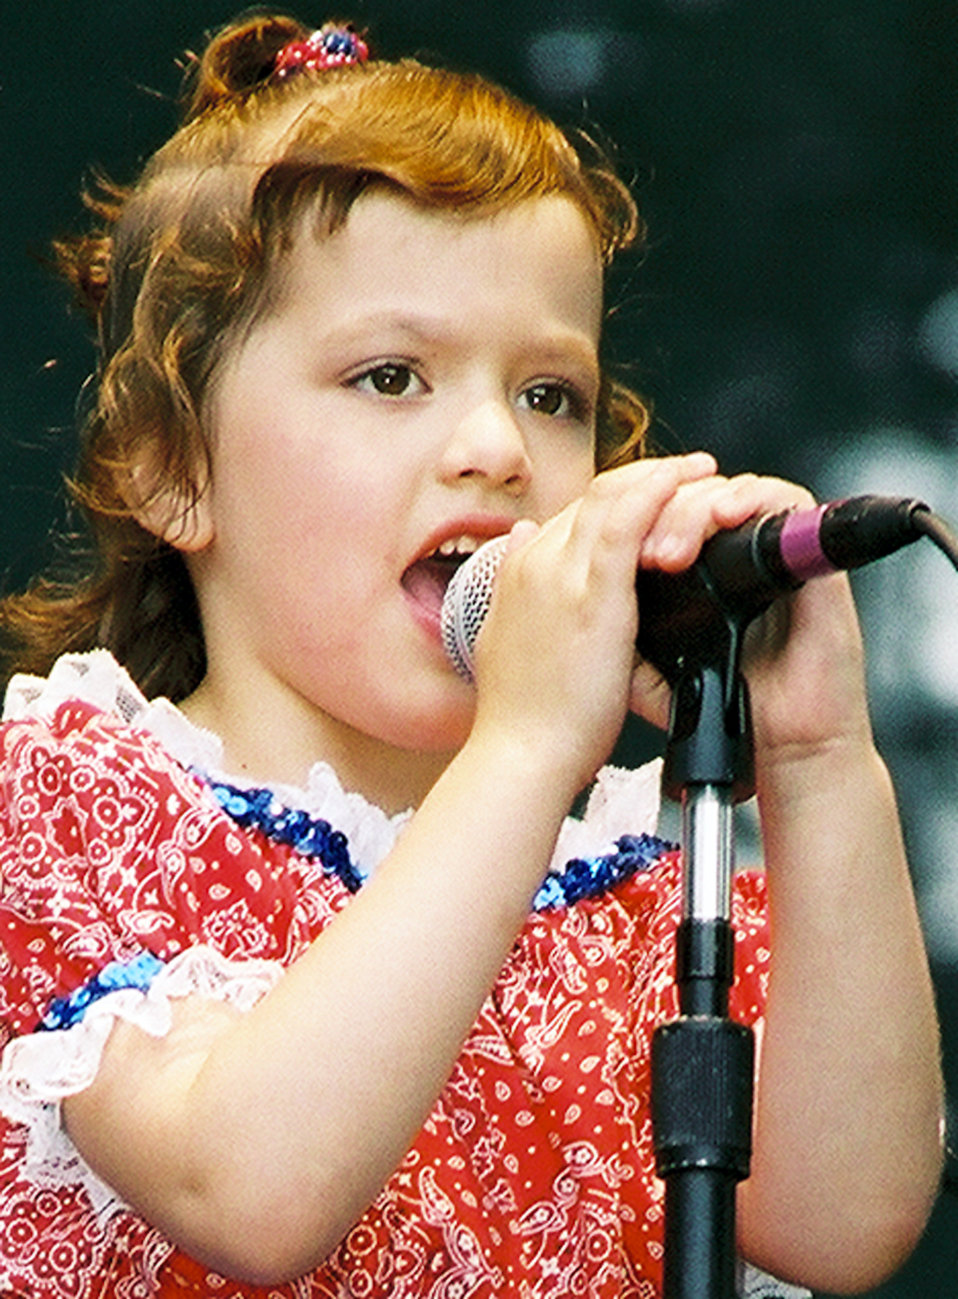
Opening act

AGAWAM, Mass. -- Six-year-old Jordyn Tabury set the stage for country-music artist Lee Greenwood at a military appreciation day concert at Six Flags in Agawam, Mass., on June 14. Jordyn opened the concert when she sang Greenwood's